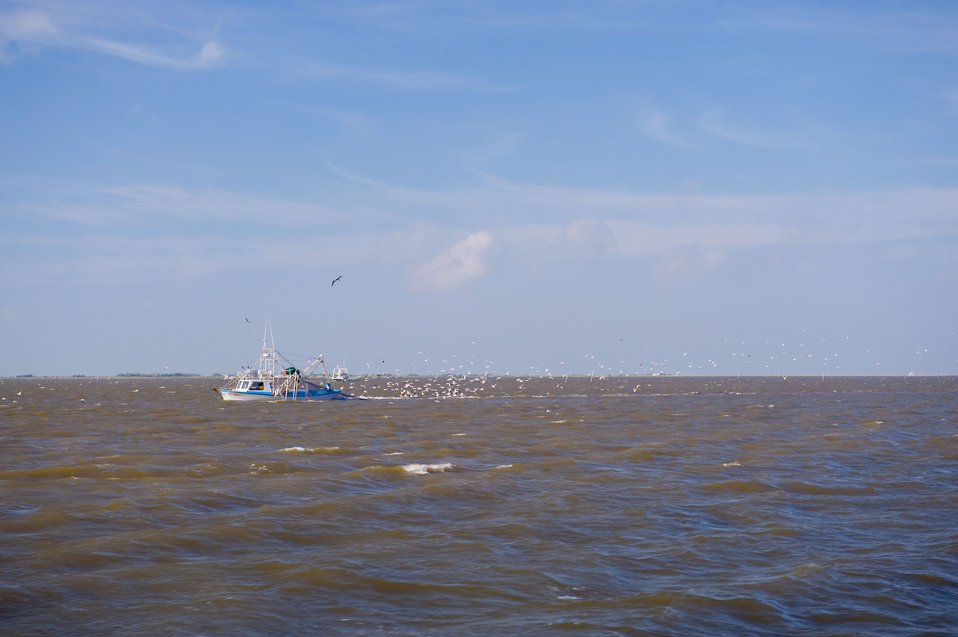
A day's catch.

May 12, 2010.